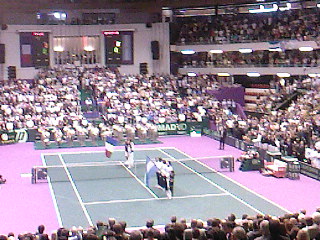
2010 Davis Cup semi-final France vs Argentina. The teams during the national anthems, before the doubles match.